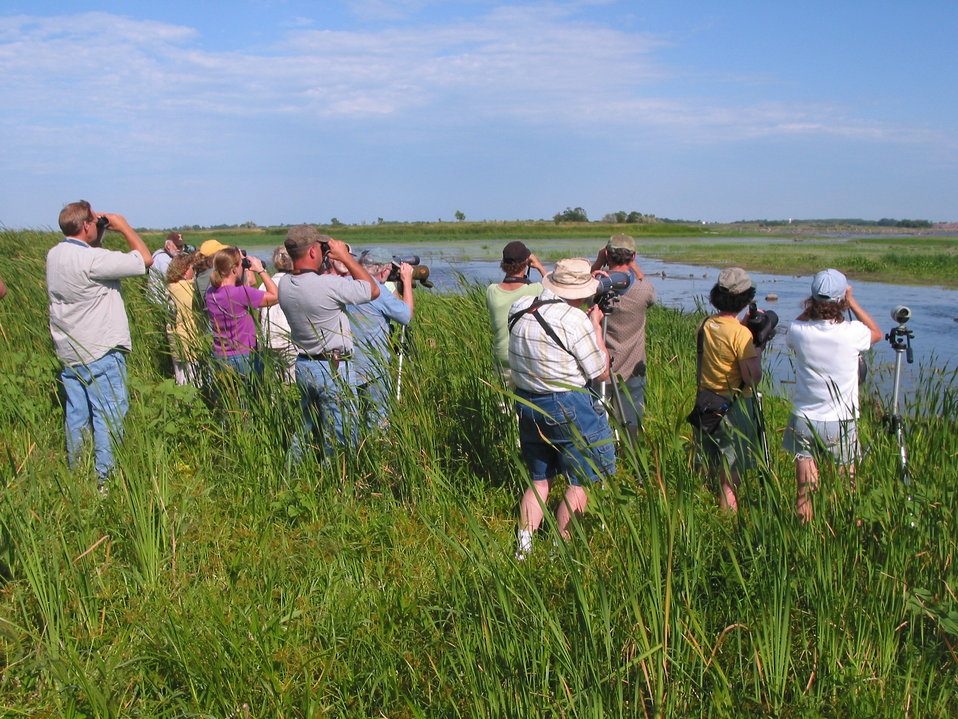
Birding on the Prairie

Participants of a shorebird workshop look over a wetland in Waubay Wetland Management District, South Dakota.